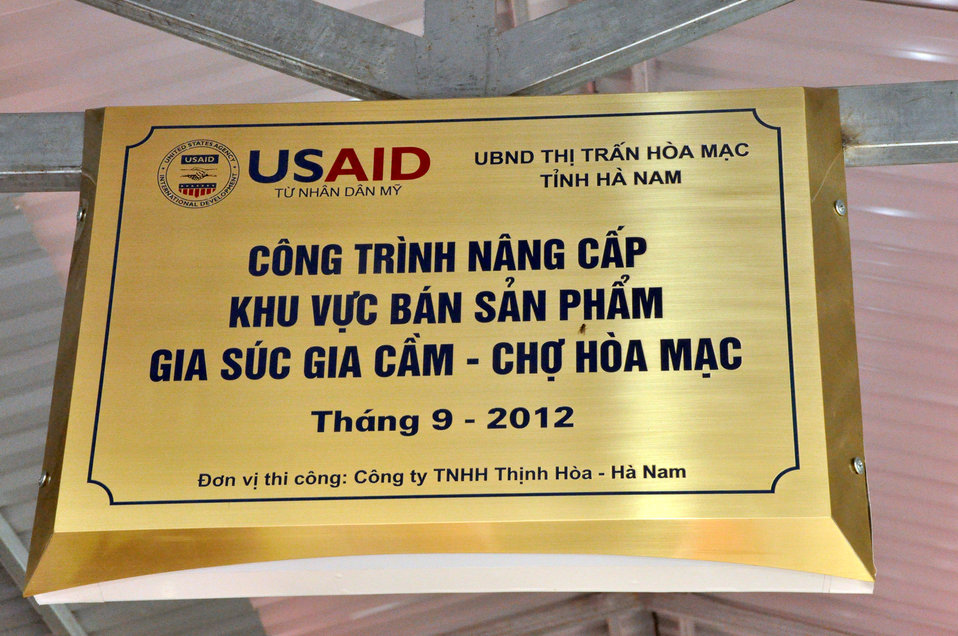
Handover Ceremony Hoa Mac Market Ha Nam

October 26, 2012